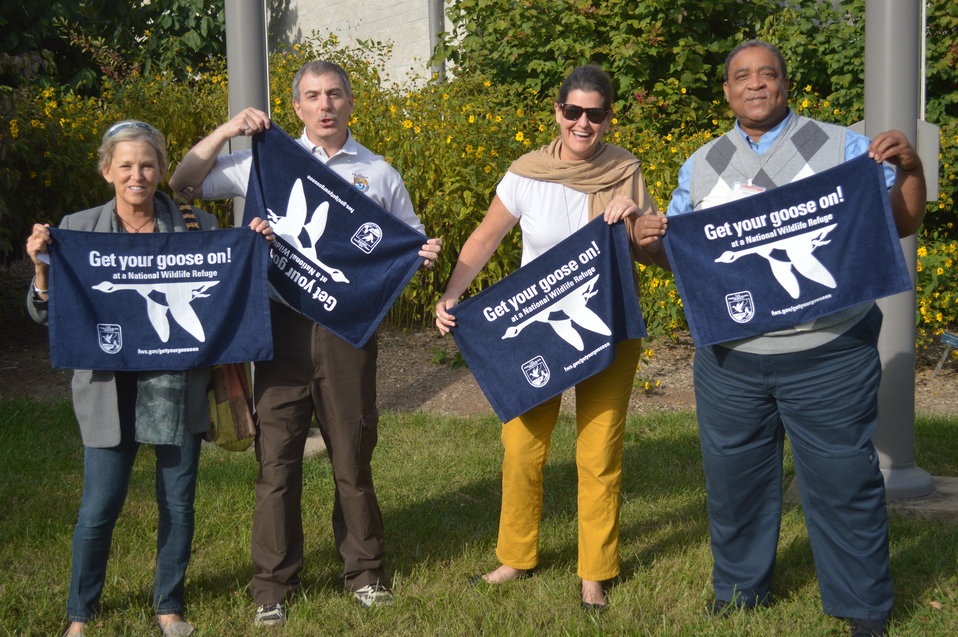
Get Your Goose On!

Photo taken at the National Conservation Training Center in Shepherdstown, WV.

Credit: Ryan Moehring / USFWS

#GetYourGooseOn